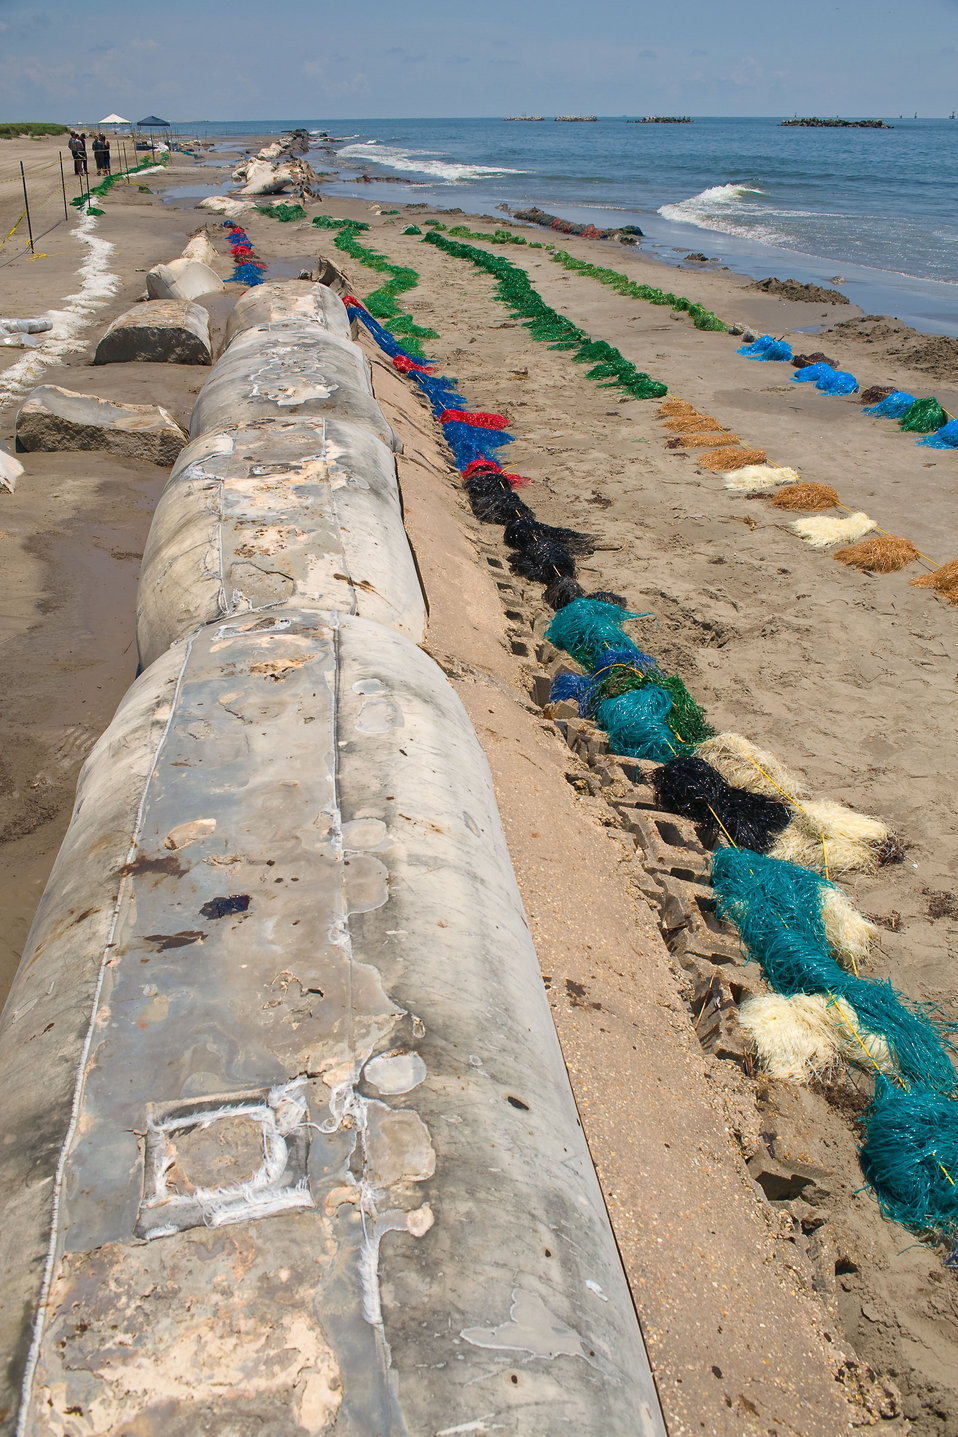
June 1, Beaches lined with absorbent oil material

Lafourche, La.